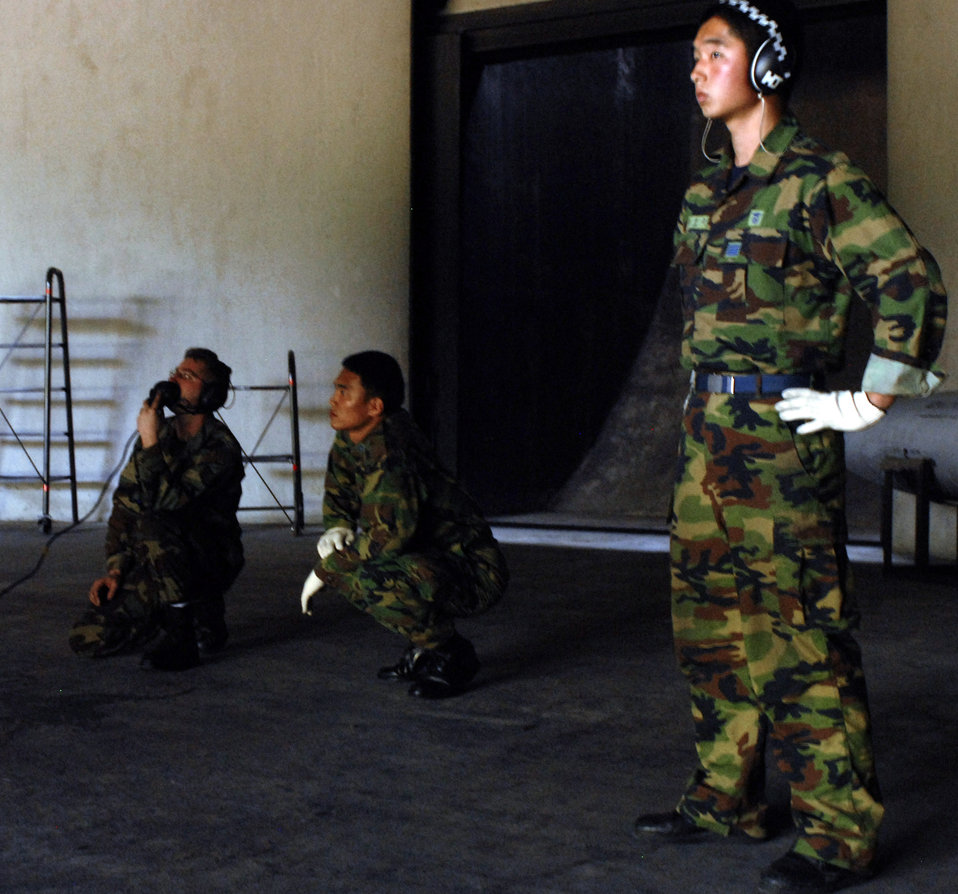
Buddy Wing Program teams up U.S., Korean Airmen

South Korea air force member Staff Sgt. Hyunjun Choi stands by as Staff Sgt. Craig Simpson and South Korea air force member Tech. Sgt. Yusan Song run through a systems check before launching an F-16 Fighting Falcon Oct. 24 at Jungwon Air Base, South Korea, during a Buddy Wing program exercise. Sergeants Choi and Song are assigned to the 161st Maintenance Squadron and Sergeant Simpson is a crew chief with the 80th Aircraft Maintenance Squadron. The Buddy Wing program is a way for U.S. Air Force and South Korea air force members to develop teamwork, exchange ideas and improve war time tactics. The F-16 is from the 8th Fighter Wing, Kunsan AB, South Korea.